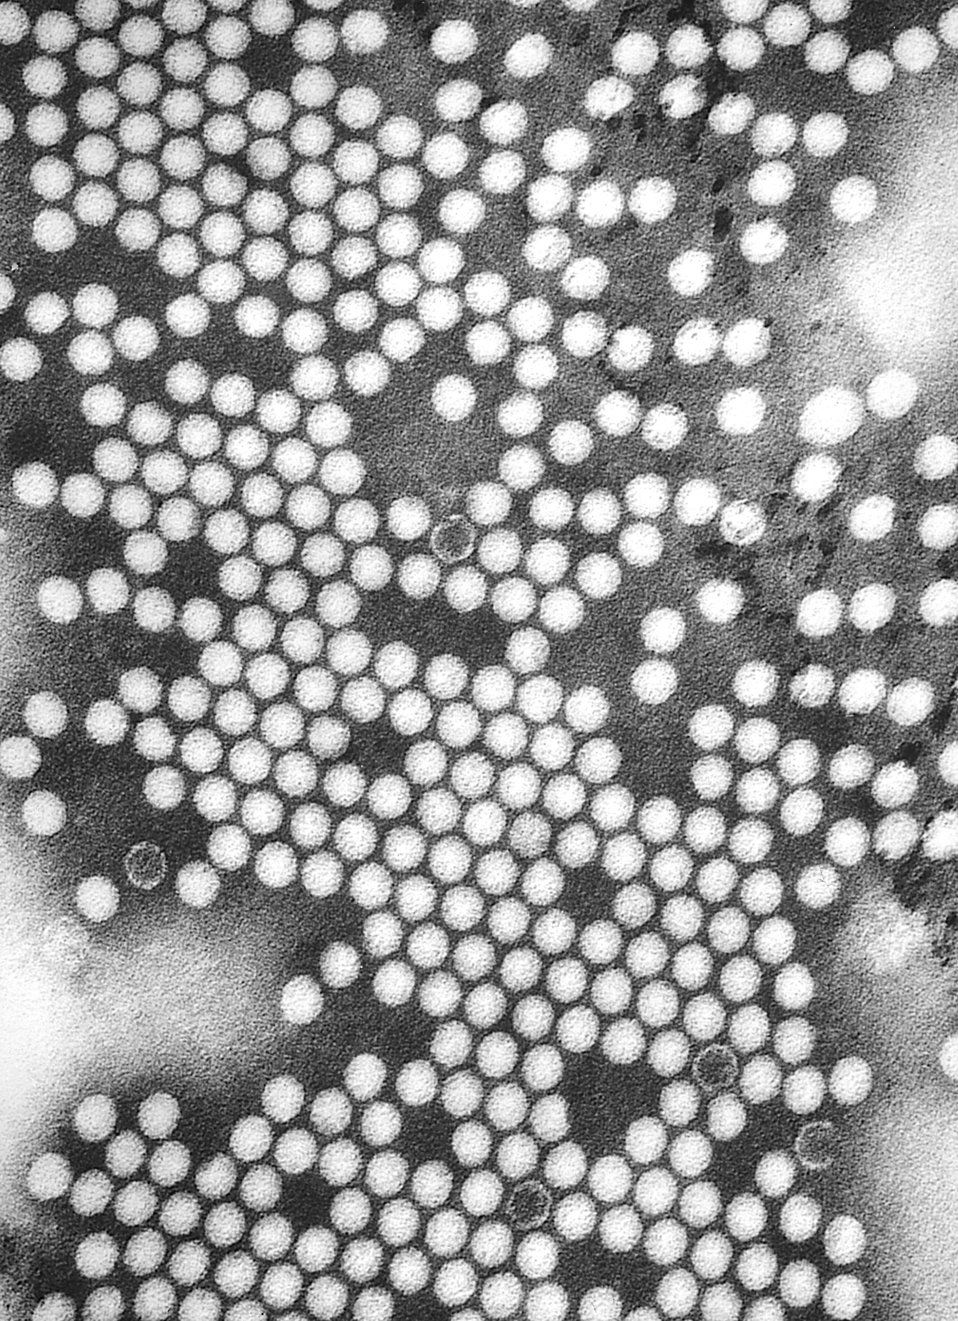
Electron micrograph of the poliovirus.